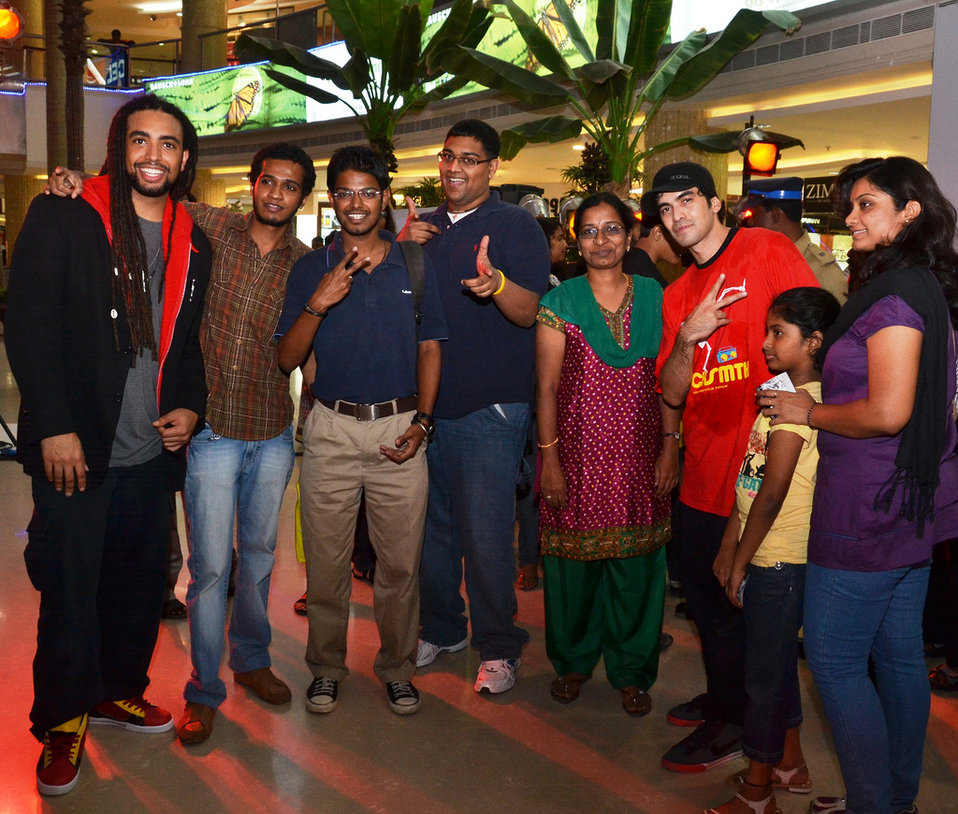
HaviKoro Meets With Fans

HaviKoro, an American breakdancing group, meets with fans in Chandigarh, India, on January 19, celebrating the sixth anniversary of the American Corner in Chandigarh.